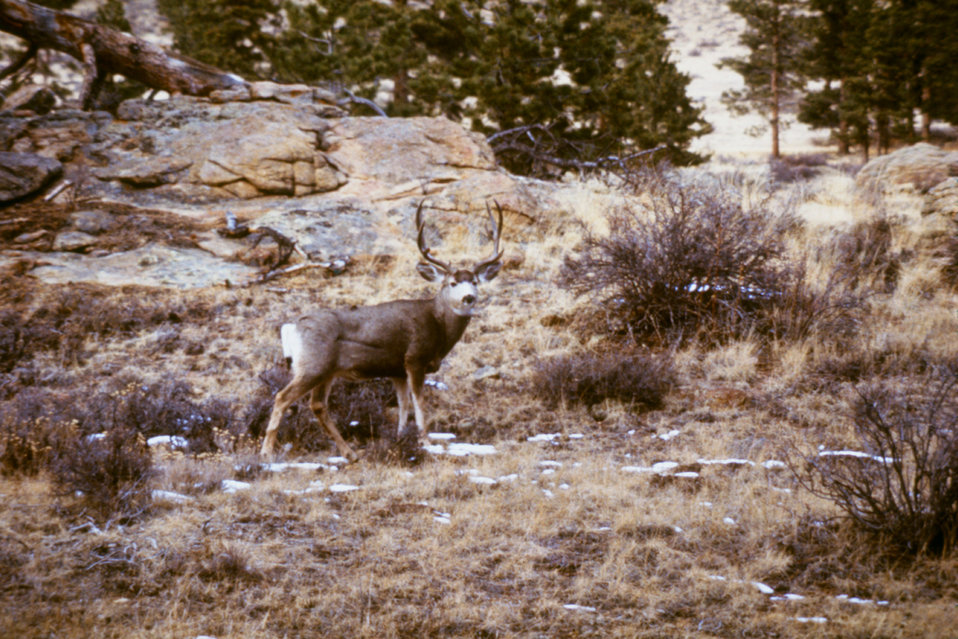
This mule deer, Odocoileus hemionus, is the major host of the adult winter tick, Dermacentor albipictus.